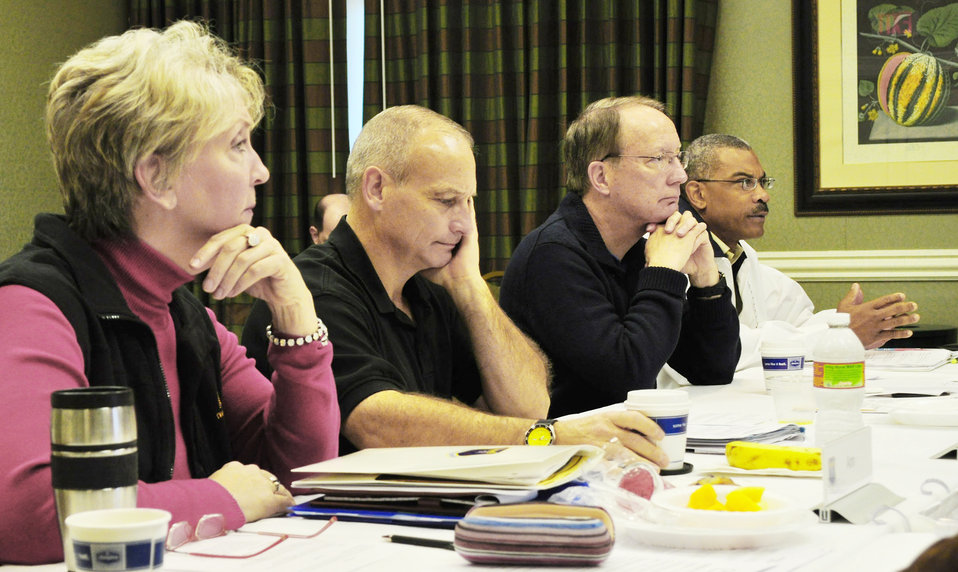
Air Force Global Strike Command leaders release command's mission, vision

Ann Mitchell, Maj. Gen. James M. Kowalski, Lt. Gen. Frank G. Klotz and Chief Master Sgt. Jack Johnson consider a presentation by retired Gen. Gregory S. Martin during the Air Force Global Strike Command senior leader off-site meeting to develop a mission and vision statement for the new command Oct. 16 in Vicksburgh, Miss. Ms. Mitchell is the director of installations, logistics and mission support for Air Force Global Strike Command, General Kowalski is the AFGSC vice commander. General Klotz is the AFGSC commander, and Chief Johnson is the command chief for AFGSC.